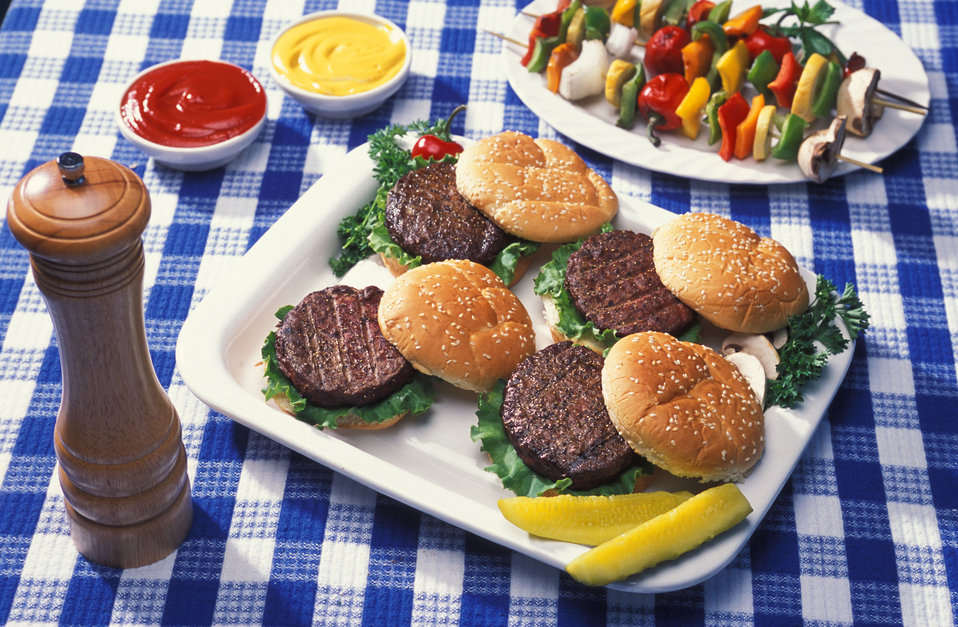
Studies have shown that olive powder (a byproduct of olive processing) has the potential to suppress the foodborne pathogen E. coli O157:H7 in hamburger patties and to retard the formation of potentially carcinogenic heterocyclic amines that can form when the burgers are cooked. The U.S. Department of Agriculture’s (USA) Agricultural Research Service (ARS) scientists at ARS’ Western Regional Research Center in Albany, CA have been testing the capacity of olive powder in concurrently suppressing three targets of concern: two amines and a pervasive E. coli.